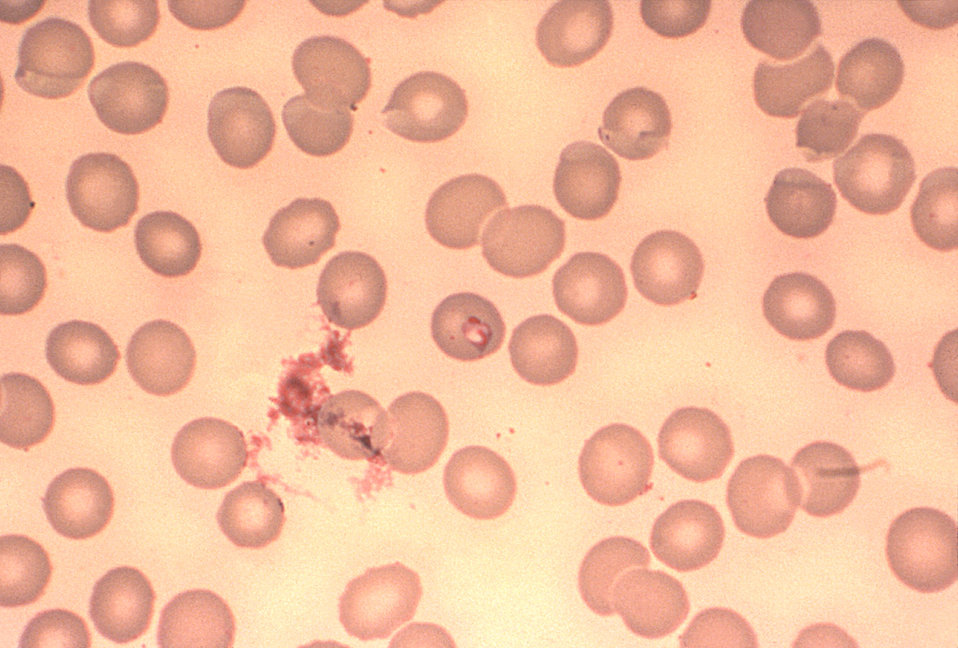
In this thin film Giemsa stained slide, note the similarity between this Babesia sp. to a Plasmodium sp. parasite.